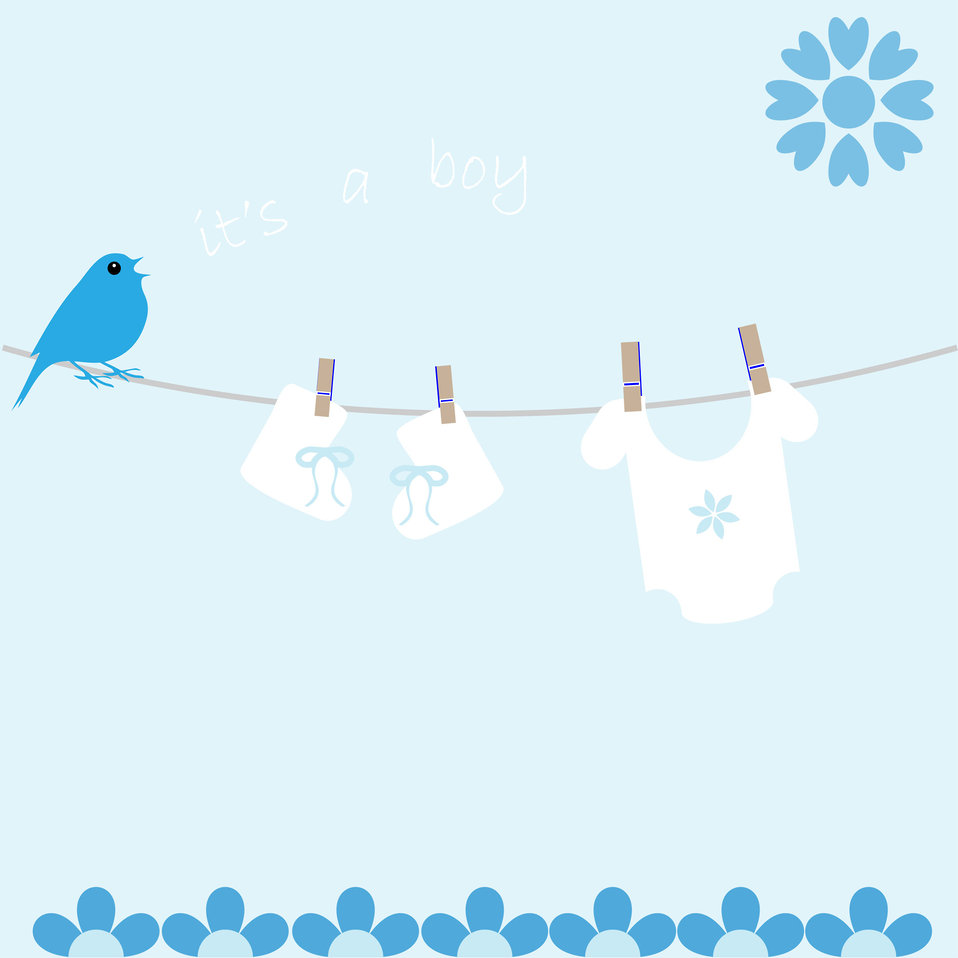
Baby boy card announcement

Its a boy cute bird, washing line, baby clothes, baby boy card template for scrapbooking.